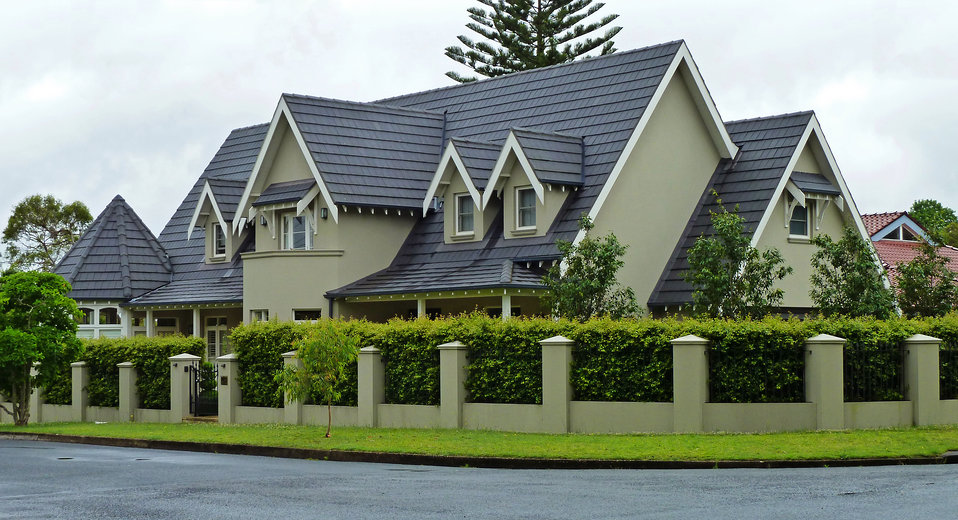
100 Springdale Road, East Killara, New South Wales, Australia.